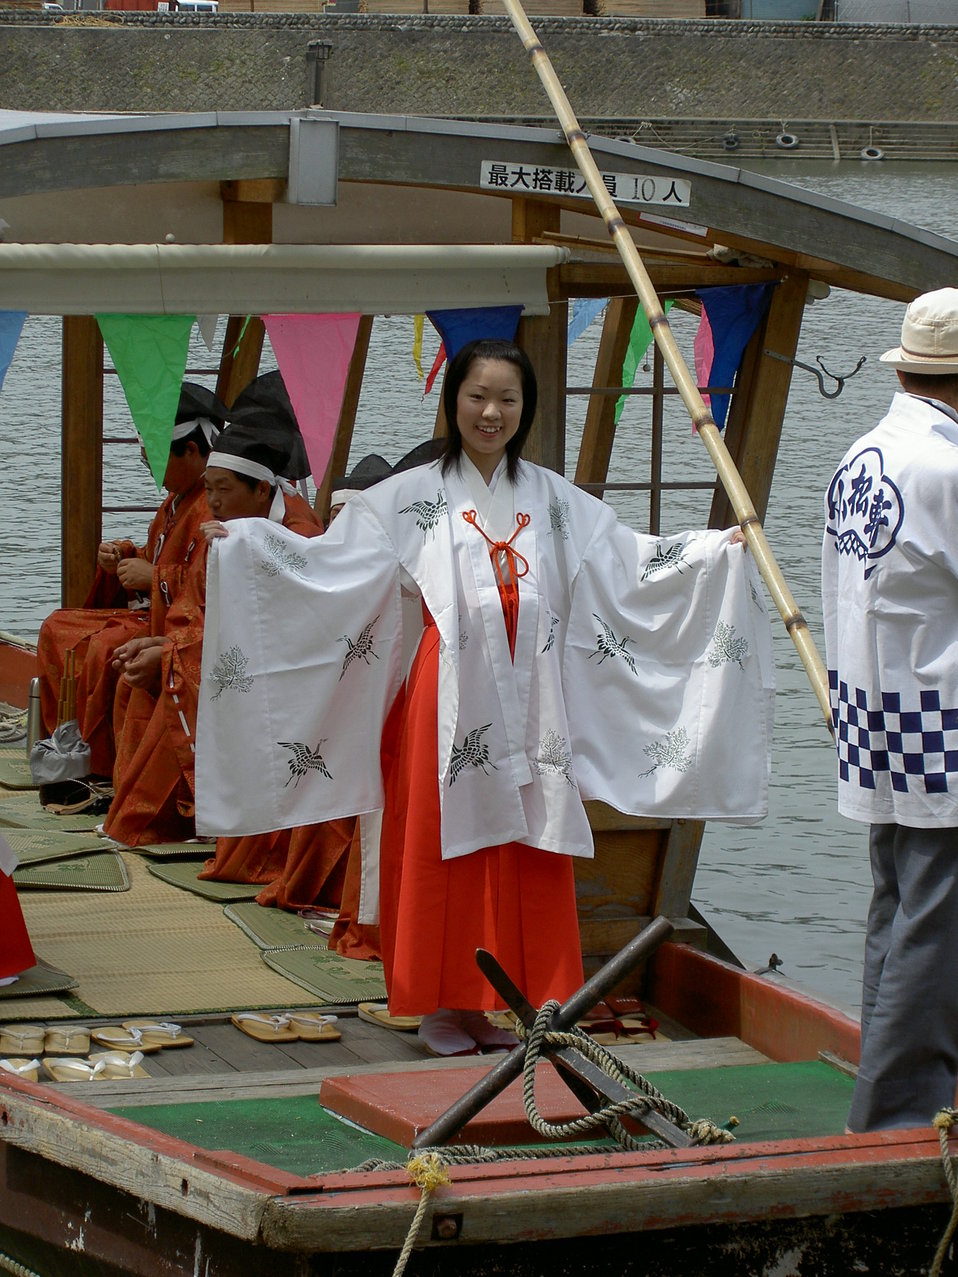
Miss Hita at the River Opening Festival.